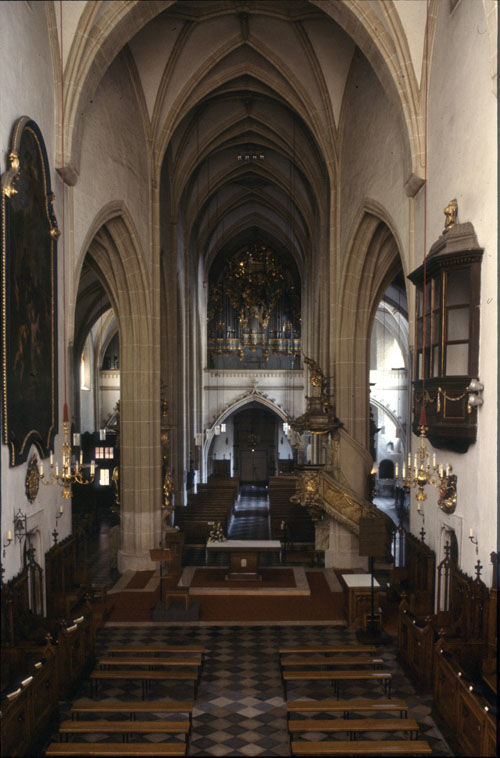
This media shows the protected monument with the number 53276 in Austria. Deutsch: Pfarrkirche Baden St. Stephan